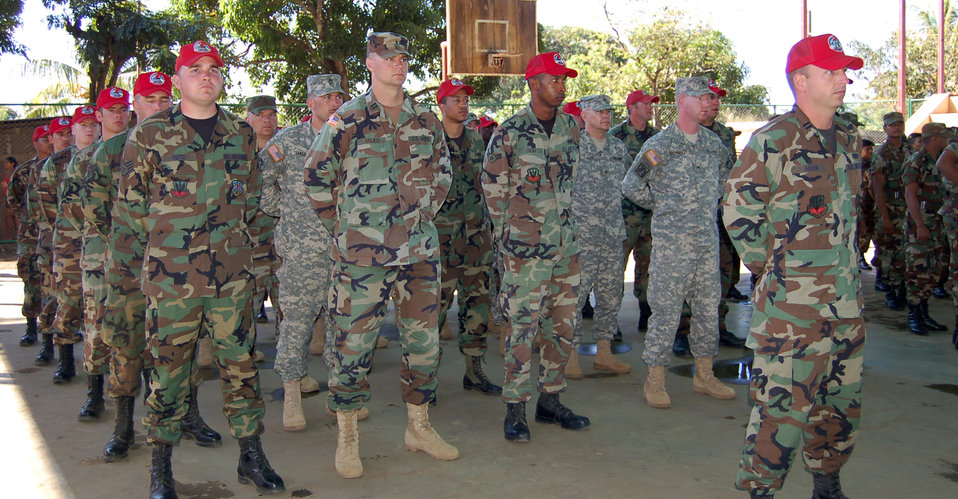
New Horizons-Nicaragua 2007

Members attached to the 820th Expeditionary Red Horse Squadron, Nellis Air Force Base, Nev., represent all U.S. military units that are part of New Horizons - Nicaragua 2007 during its opening ceremonies Feb. 15. The ceremonies officially started the joint humanitarian mission that involves building a new school and a new medical clinic in the Santa Teresa area. The mission also includes offering free medical clinics and veterinary care.